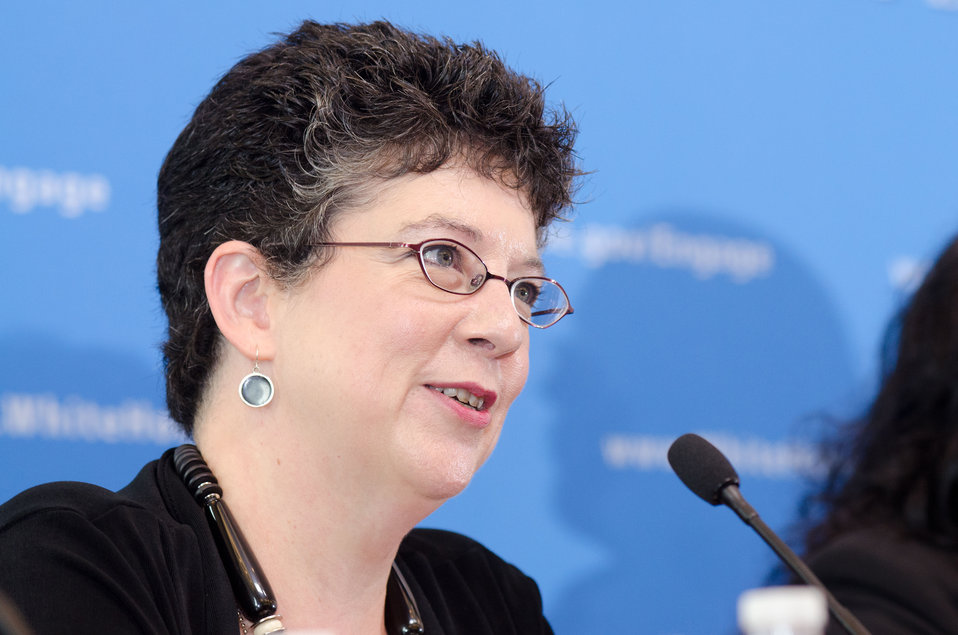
East Lake United Methodist Church Pastor Reverend Sally Allocca is one of eleven honorees recognized for their efforts to reduce hunger and increase food security in the U.S. and internationally at the White House Champions of Change Strengthening Food Security at Home and Abroad Event held at the White House on Thursday, September 6, 2012, in Washington, D.C.